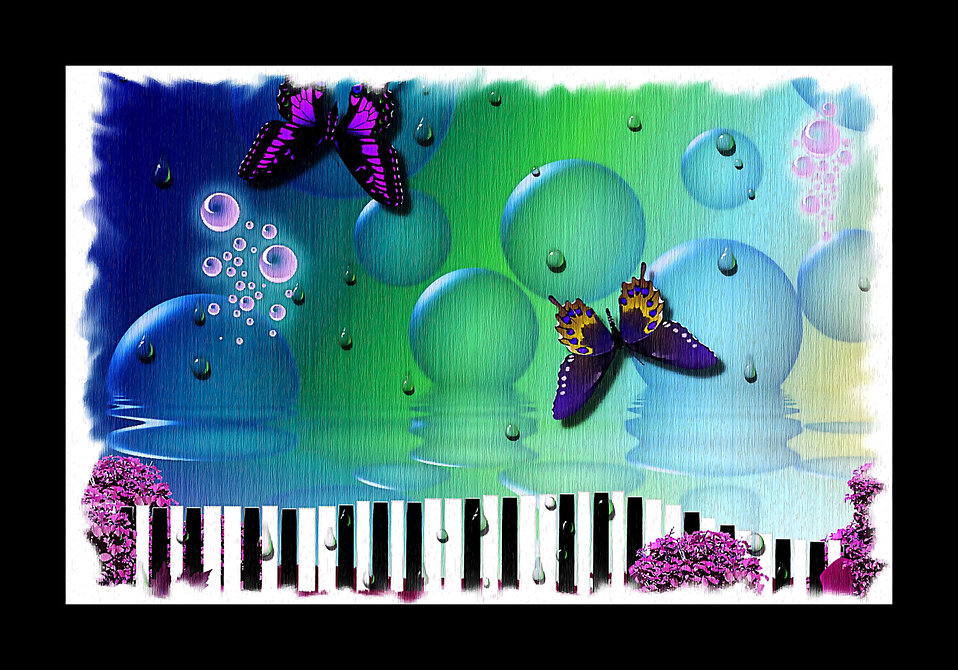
Natural music 2

Natural background music in the bar pattern.